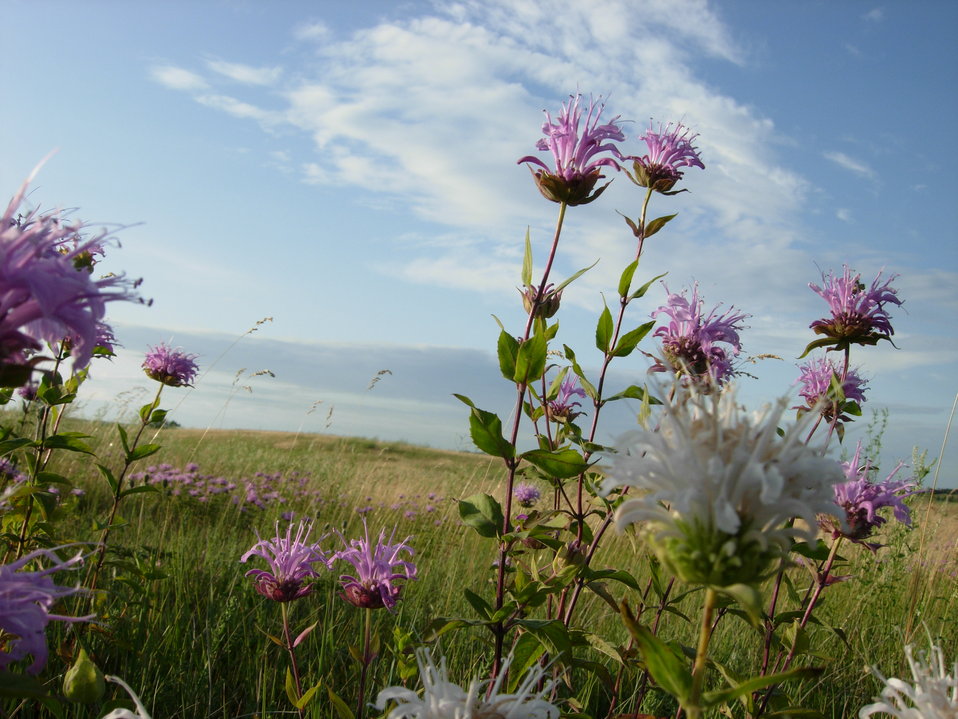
Wild Bergamot

The distinctive aroma of Wild Bergamot fills the air in mid-summer on Upper Souris National Wildlife Refuge.